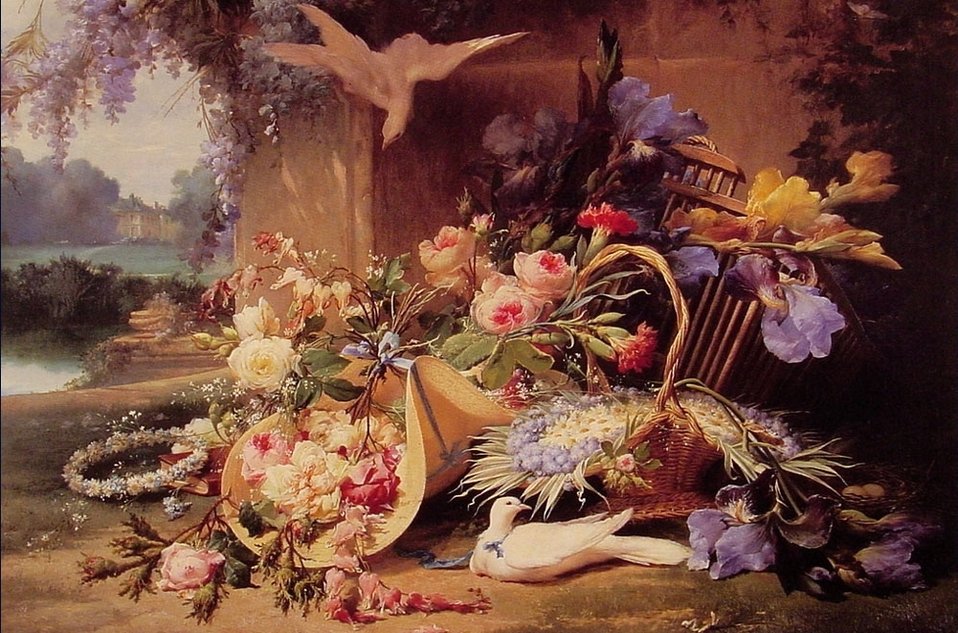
Bidau, Eugene - Elegant Still Life with Flowers - 19th c